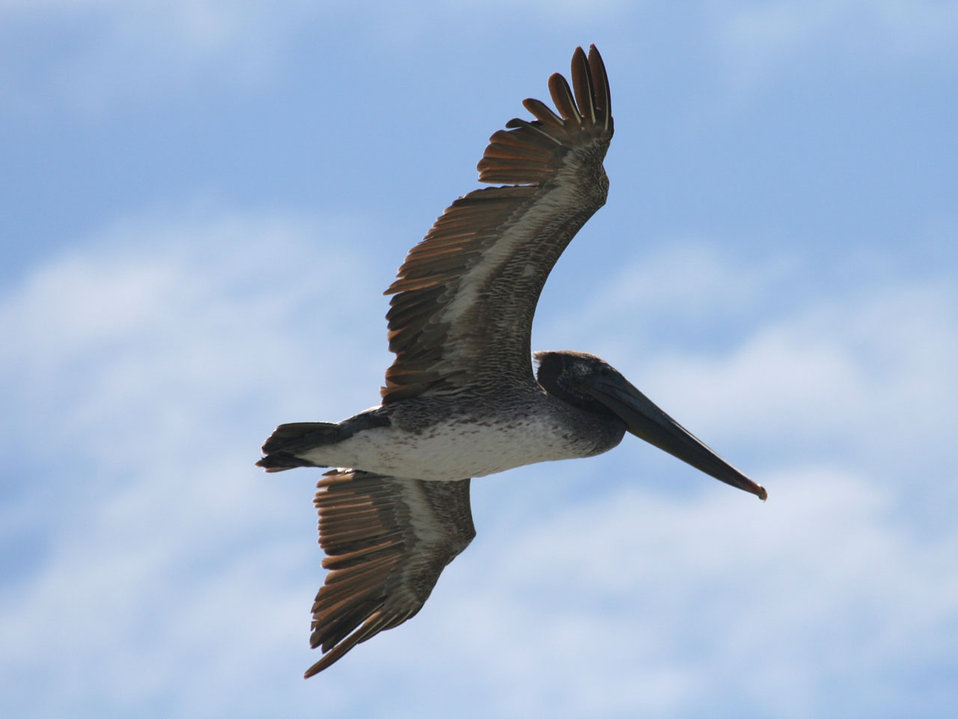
Pelican flying overhead

A pelican glides overhead in huntington beach, california.